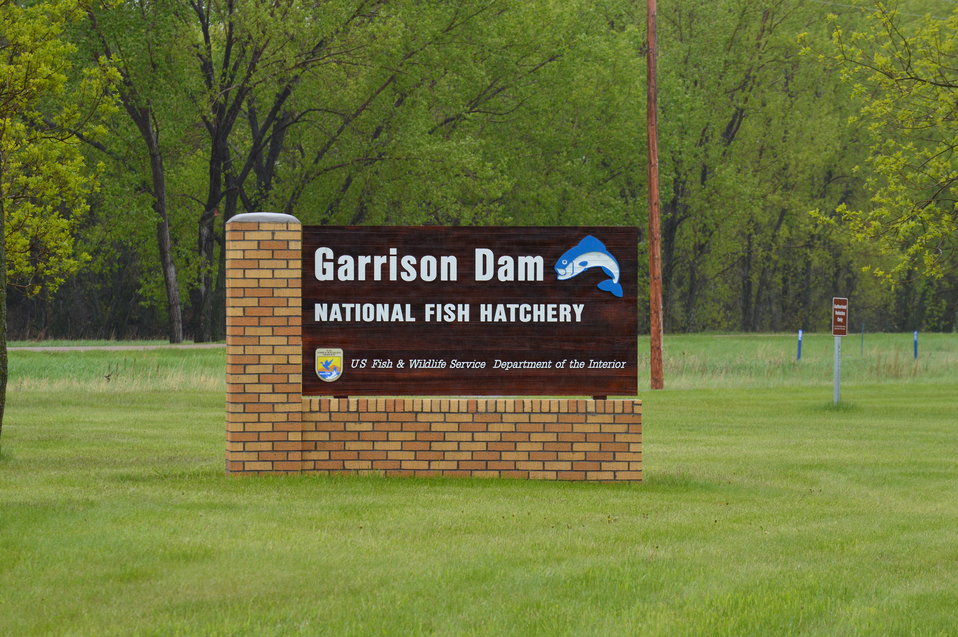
Garrison Dam NFH sign

Garrison Dam National Fish Hatchery in North Dakota.